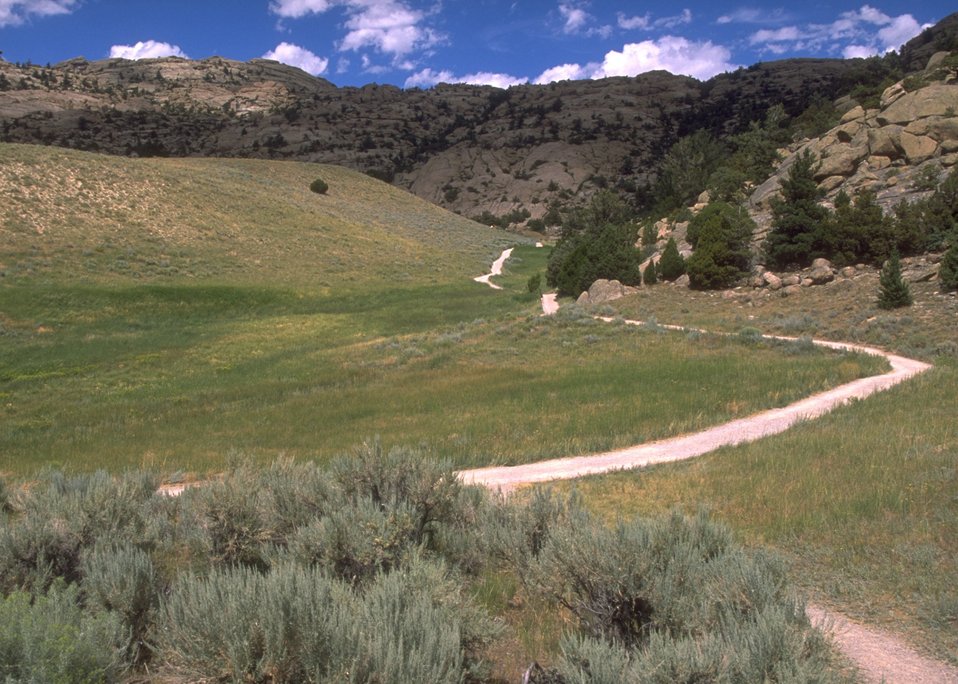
Martin's Cove area, Rawlins Field Office